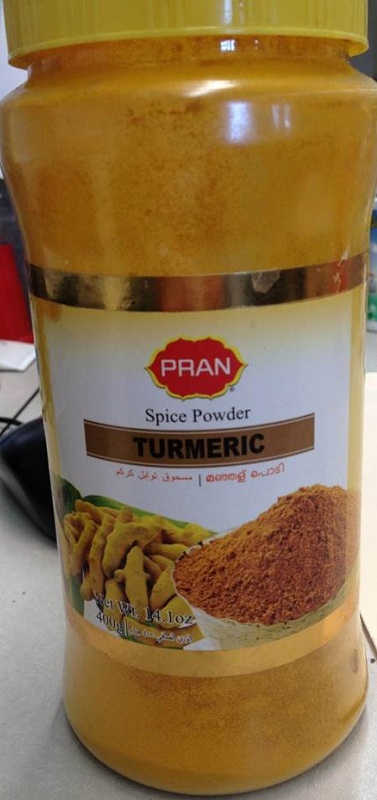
RECALLED - PRAN brand Spice Powder TURMERIC

October 3, 2013 – Product Recall – OnTime Distribution Inc. Recalls PRAN brand Spice Powder TURMERIC Due To Excessive Levels of Lead.